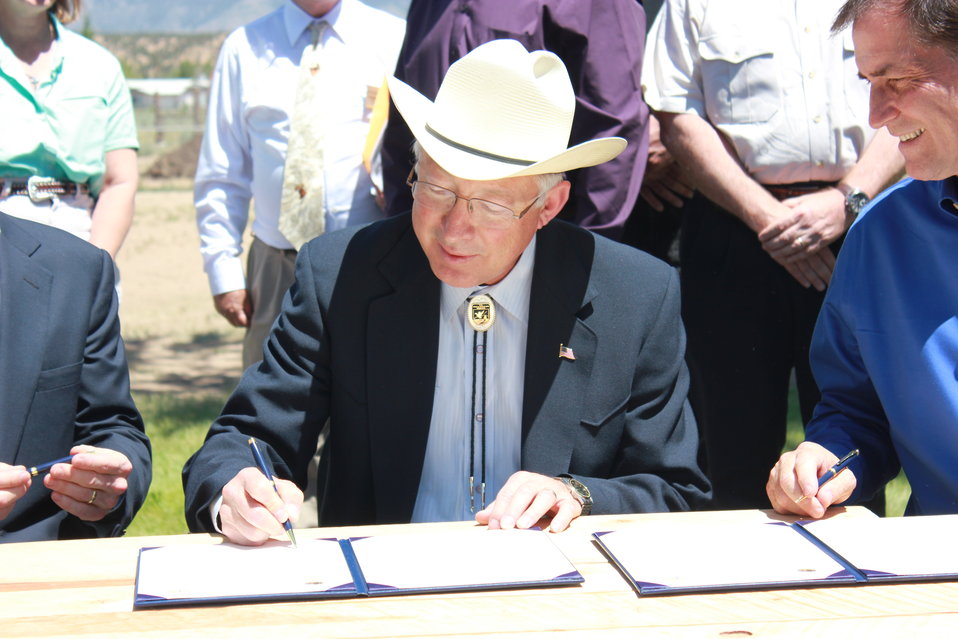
Historic Conservation Easement in Sangre de Cristo Mountains